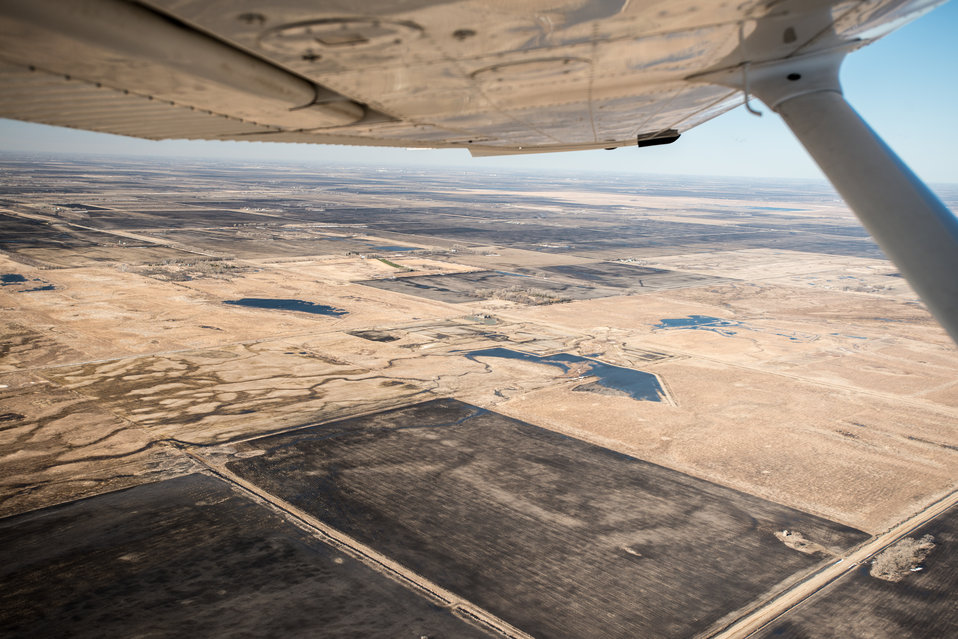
Ehlert North U.S. Department of Agriculture (USDA) Natural Resources Conservation Service (NRCS) Wetland Reserve Program (WRP) in Wilkin County, MN, on Tuesday, April 30, 2013. For information about this and other programs from the USDA Red River Basin Initiative (RRBI) please see www.mn.nrcs.usda.gov/news/features13/RRBI.html.